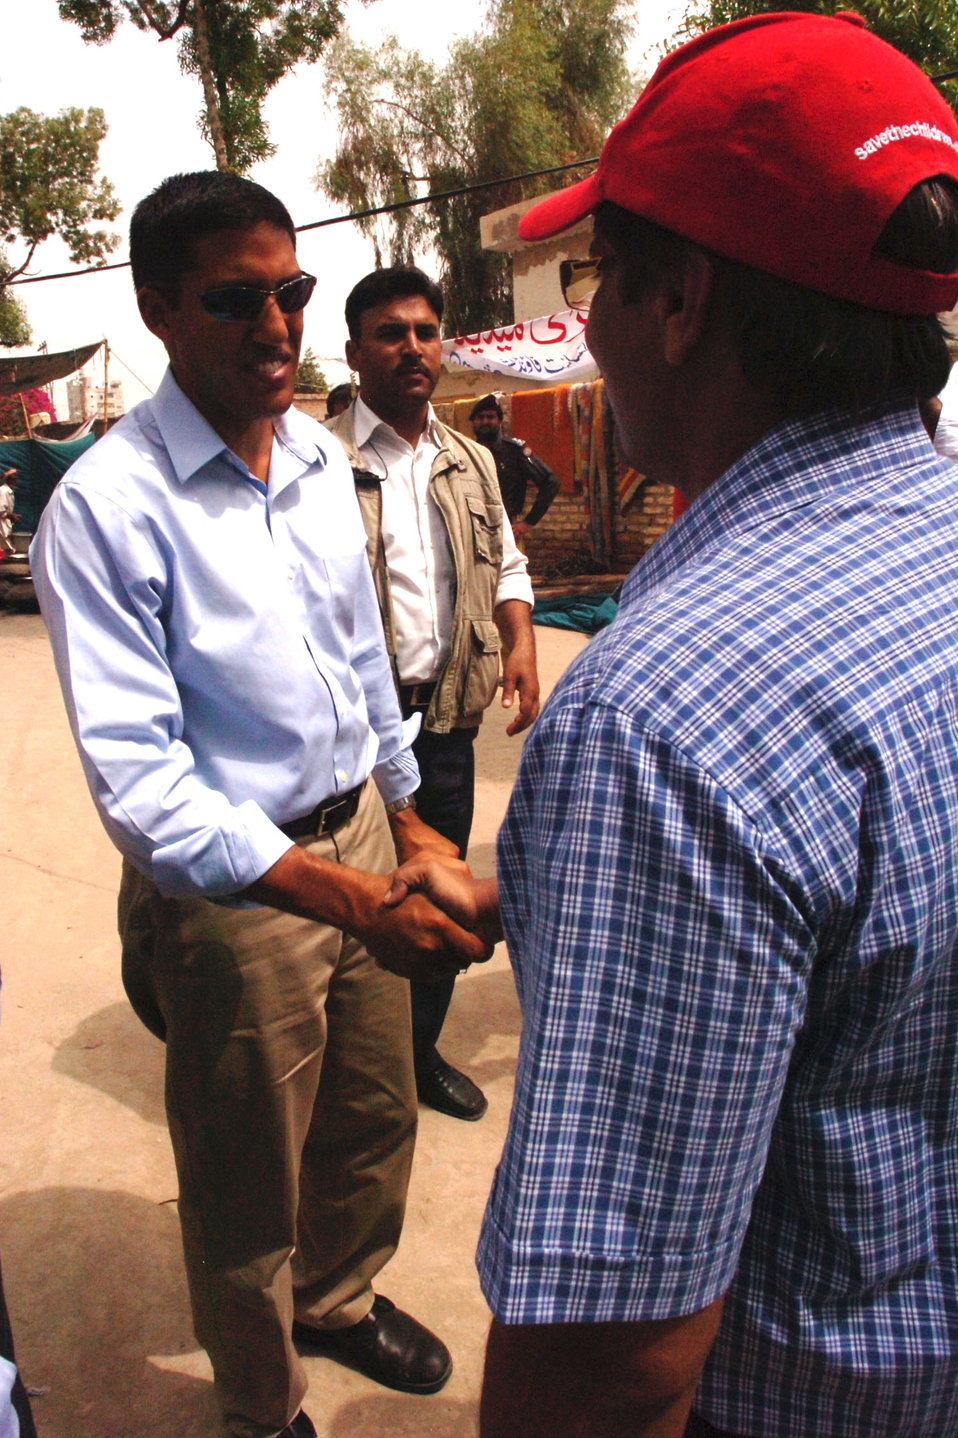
USAID Admin. Shah Consults With Pakistanis

Dr. Rajiv Shah, Administrator of the U.S. Agency for International Development (USAID), arrives in Pakistan to consult with the Government of Pakistan and international and non-governmental organizations on the extensive U.S. response to the country's devastating floods on August 24, 2010.